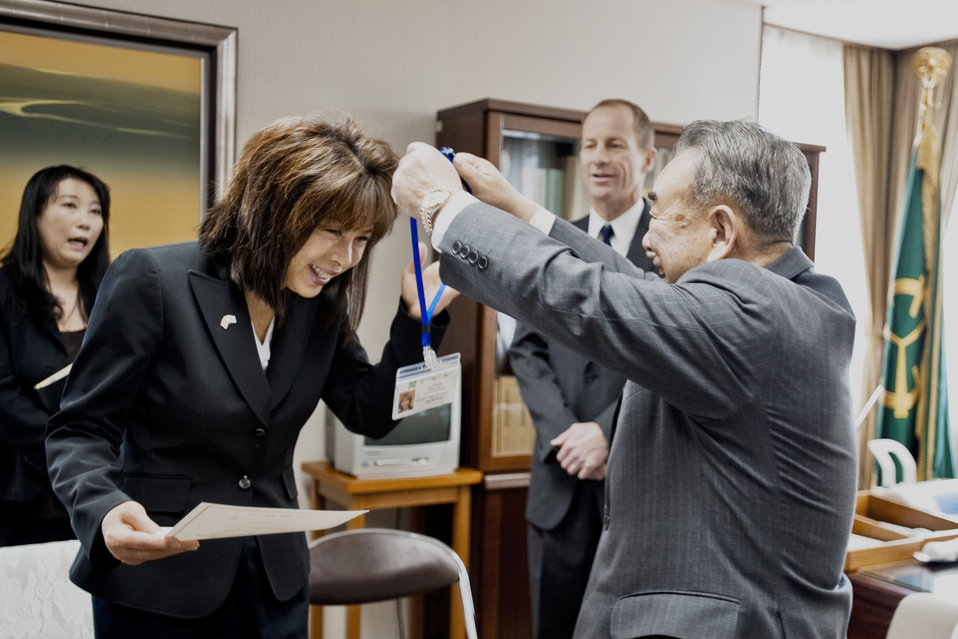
Mayor for a day

Jan Stilwell, wife of Col. David Stilwell, 35th Fighter Wing commander at Misawa Air Base, Japan, receives a Misawa City staff identification card March 23, 2010, from Misawa City Mayor Kazumasa Taneichi at the mayor's office during the Misawa Mayor for a Day event. Mrs. Stilwell was officially appointed as an honorary ambassador of Misawa City.